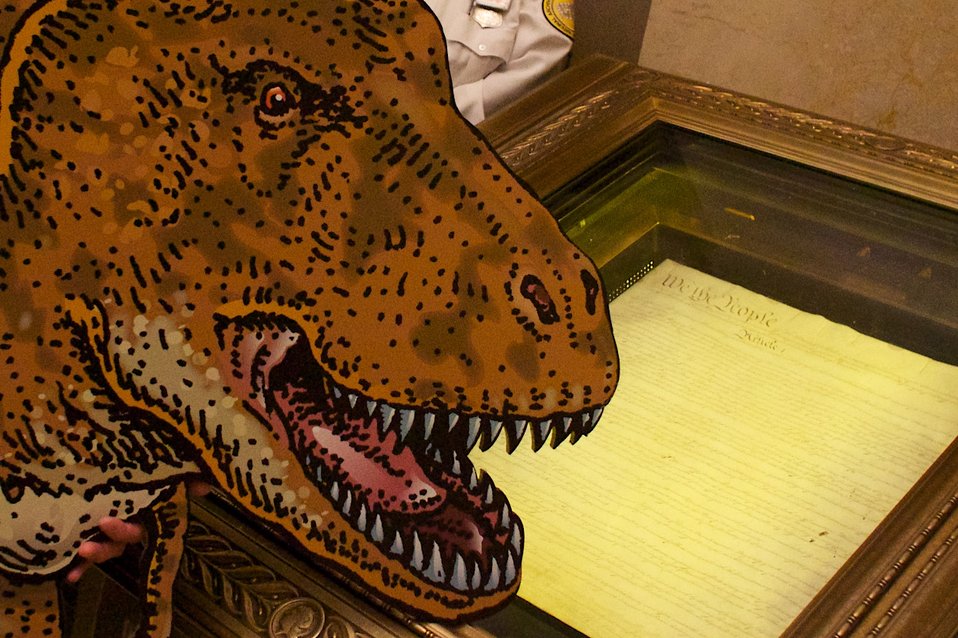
Smithsonian Institution's TRex visits the National Archives